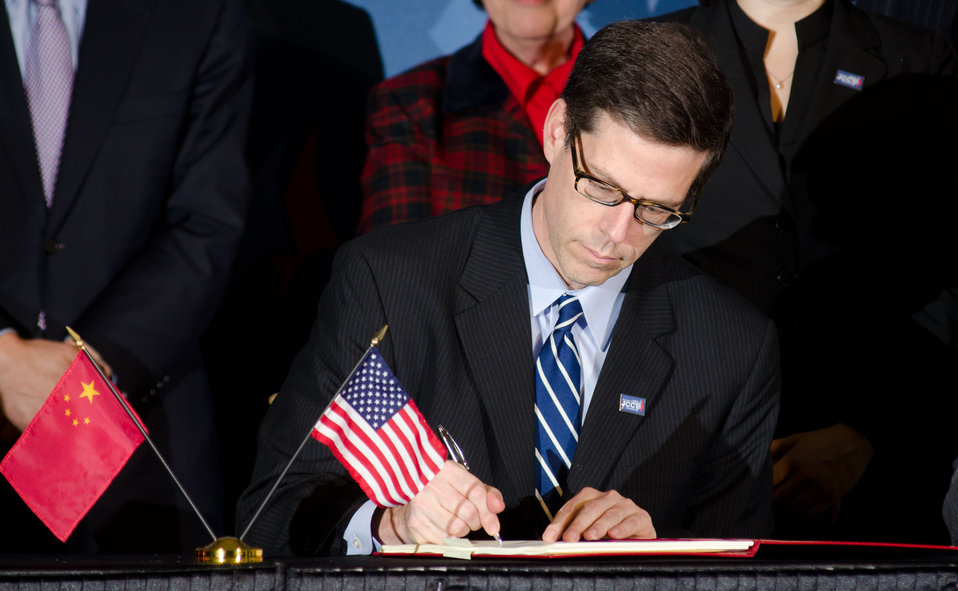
U.S. Department of Commerce Economics and Statistics Administration Acting Under Secretary Mr. Mark Doms, signs The Second Phase Report on the Statistical Discrepancy of Merchandise Trade between the U.S. and China, with the support from the principal leaders from the Chinese delegates and U.S. hosts, at the 23rd Session of the U.S. China Joint Commission on Commerce and Trade (JCCT) at the Andrew W. Mellon Auditorium in Washington, D.C. on Wednesday, Dec. 19, 2012. The JCCT holds high-level plenary meetings on an annual basis to review progress made by working groups that focus on a wide variety of trade issues. These working groups meet throughout the year to address topics such as intellectual property rights, agriculture, pharmaceuticals and medical devices, information technology, tourism, commercial law, environment, and statistics.